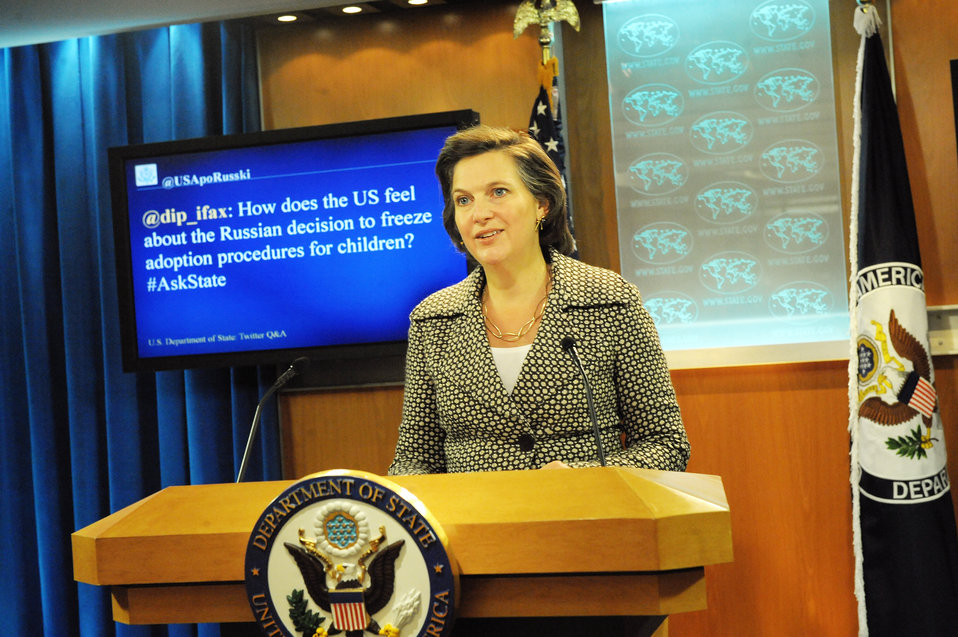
Spokesperson Nuland Responds to a Question from @USApoRusski

Victoria Nuland, Spokesperson for the U.S. Department of State, answers a question selected from the Department’s official Russian Twitter feed, @USApoRusski, on January 20, 2012.